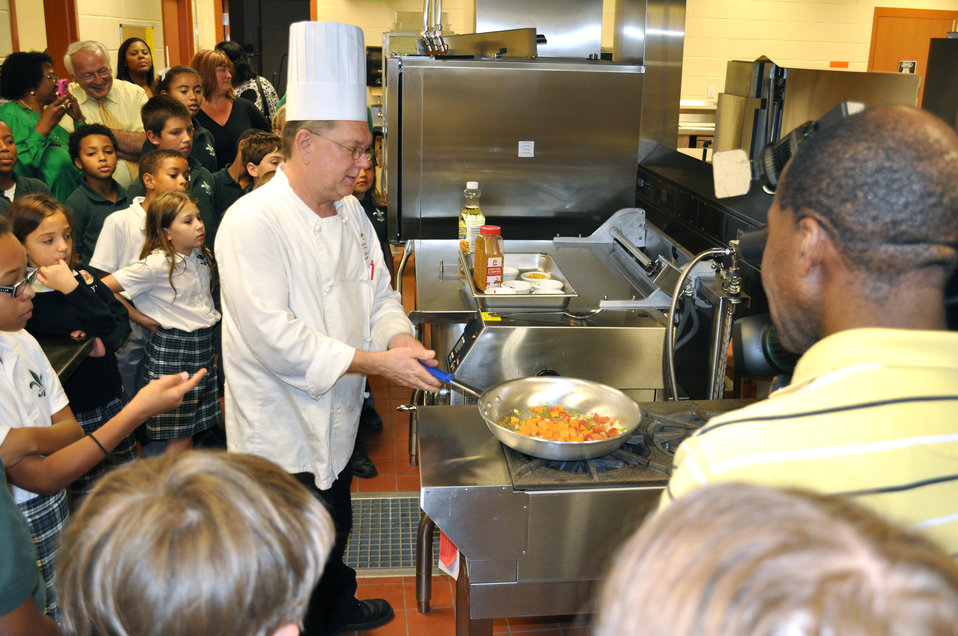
Chef Keith Faulkner prepares a healthy dish for students at Hynes Charter School in Orleans Parish, Louisiana on Aug. 20, 2012. The meal prepared was a “Recipes for Healthy Kids” contest finalist. “Recipes for Healthy Kids” is a competition in support of First Lady Michelle Obama's Let's Move initiative. The U.S. Department of Agriculture’s (USDA) Food Nutrition Service (FNS) challenged teams of school nutrition professionals, chefs, students, parents and community members to develop creative, nutritious, tasty and kid-approved recipes that schools can easily incorporate into National School Lunch menus. The recipe competition was designed to increase student’s intake of whole grains, dark green and orange vegetables, and dry beans and peas. USDA photoby Terri Romine-Ortega.